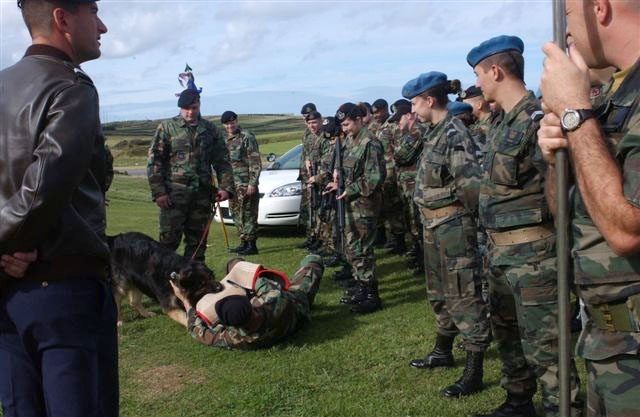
'Man's best friends' help fight war on terrorism

Staff Sergeant Jeremy Nordlund (center), and military working dog Rex do a demonstration for American and Portuguese servicemembers Feb. 22 at Lajes Field, Azores. Sergeant Nordlund and Rex conduct training like this weekly to hone their security force's skills. They are assigned to the 65th Security Forces Squadron.